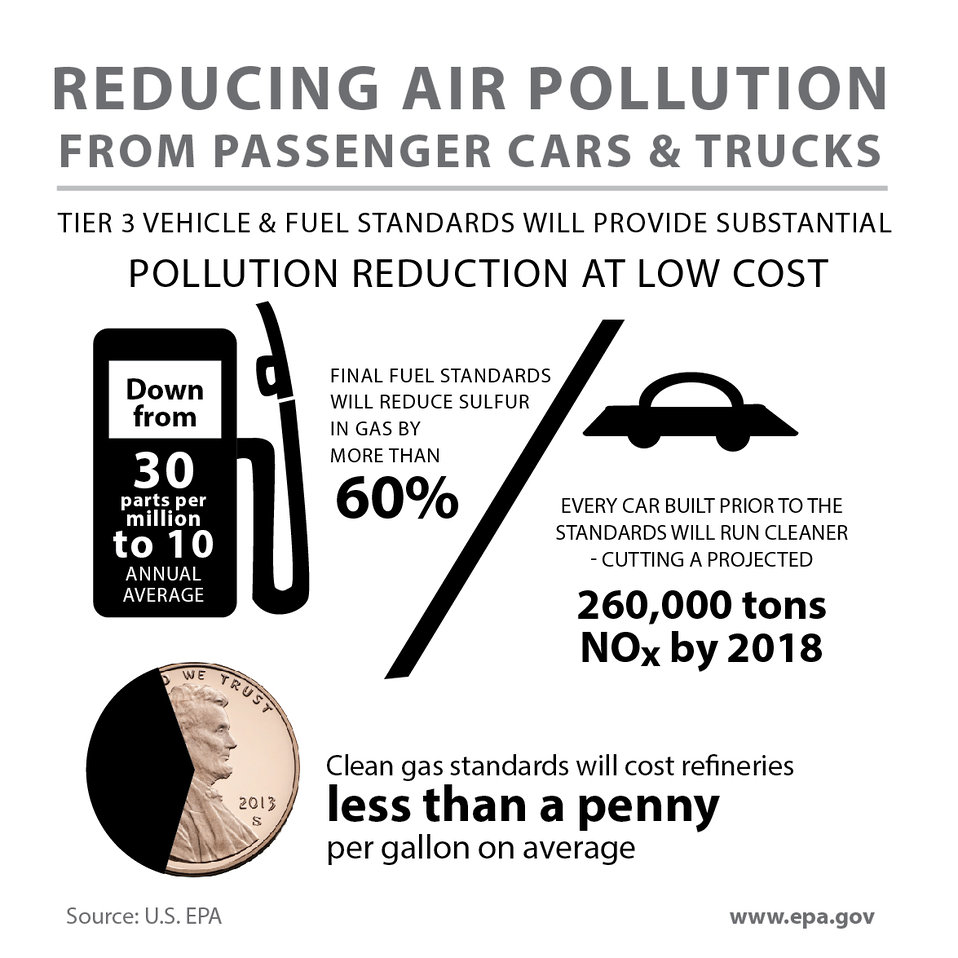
Reducing Air Pollution From Passenger Cars and Trucks

Our new vehicle and fuel standards will lead to virtually every car and truck polluting less. The cleaner-burning gas is projected to cost an average of less than one cent per gallon of gasoline -- a small fraction of 1% -- when compared to current gas prices.